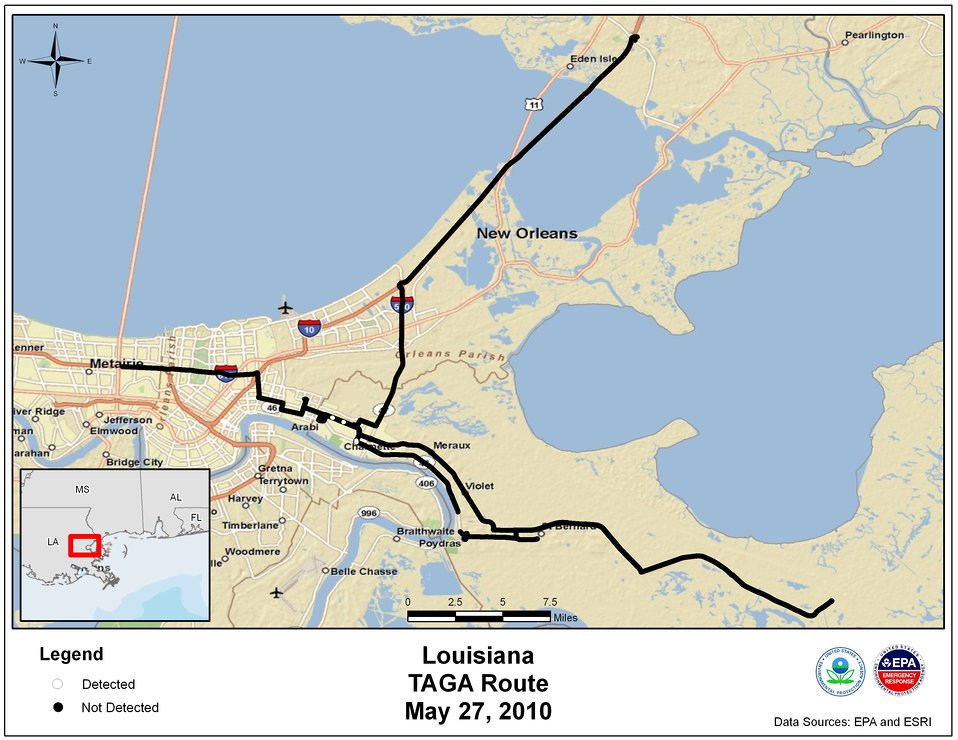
EPA TAGA Air Monitoring Locations May 27, 2010